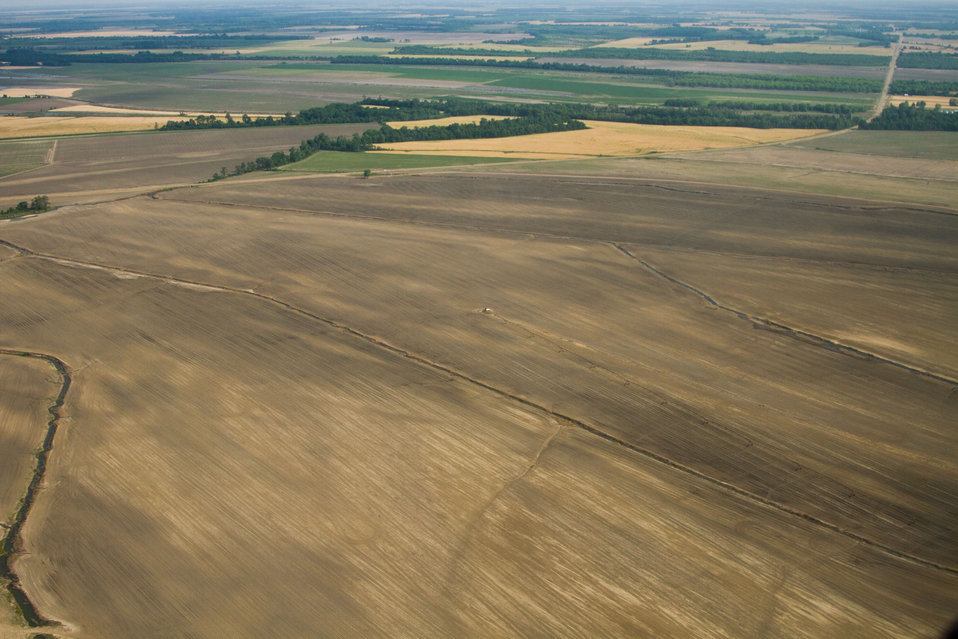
Aerial view of Mississippi River flood of farms, wilderness, and populated areas, on Thursday, May 19, 2011. from the MS side. Aerial platform was a UH-60 Blackhawk commanded by Col. Kennedy and his flight crew from the Army Aviation Support Facility #1 at Hawkins Field in Jackson, MS.